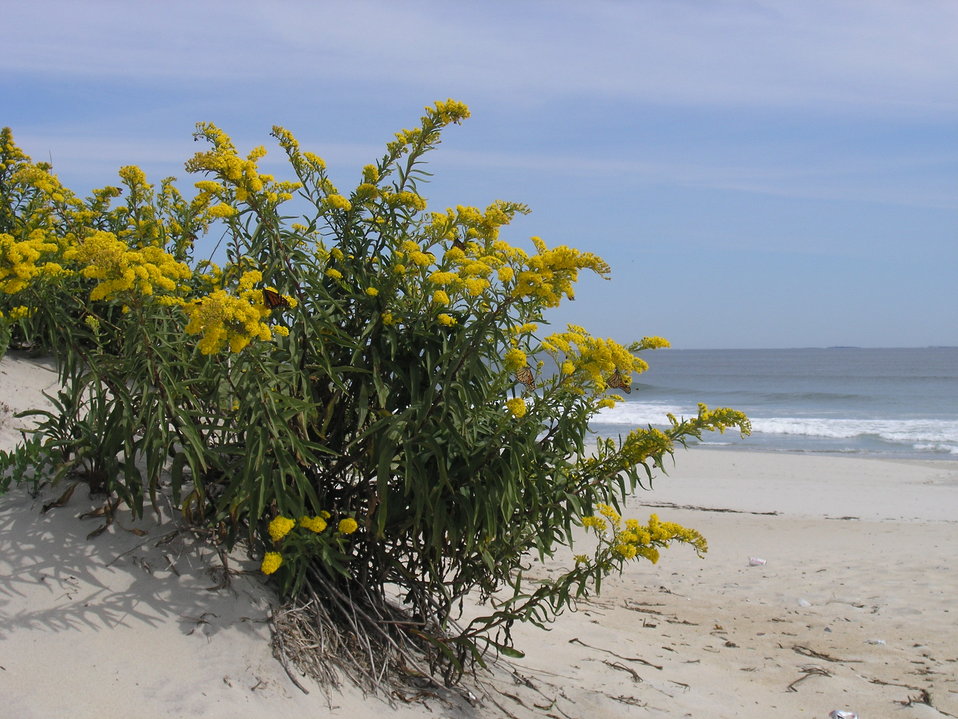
Goldenrod on Hampton Beach

Monarch butterflies on a goldenrod at Hampton Beach, NH.